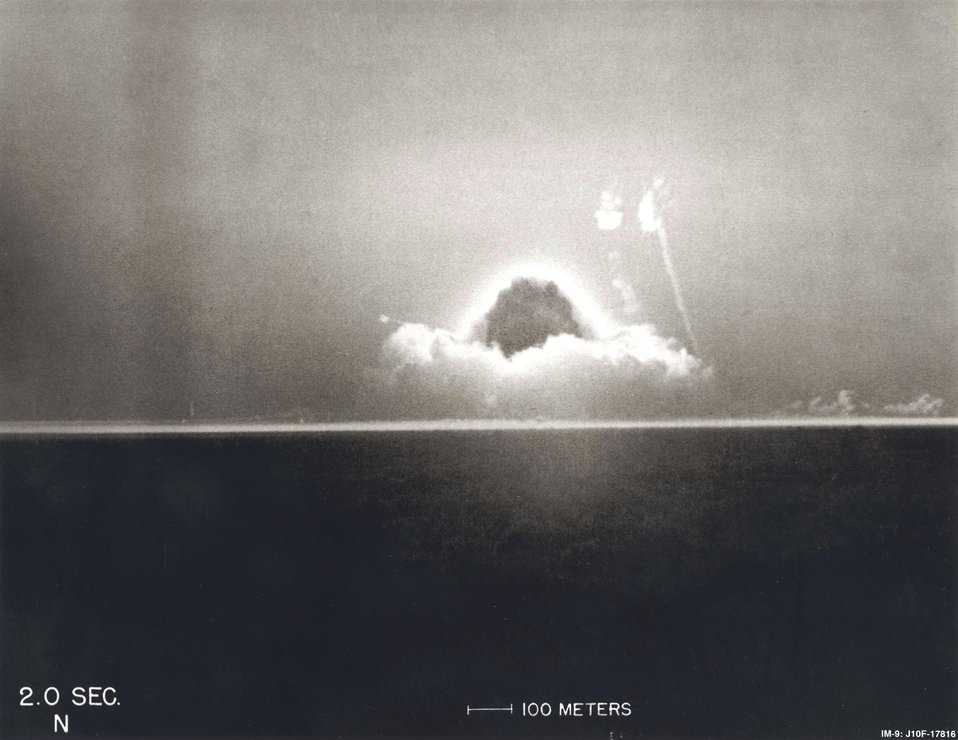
TRINITY AT 02.0